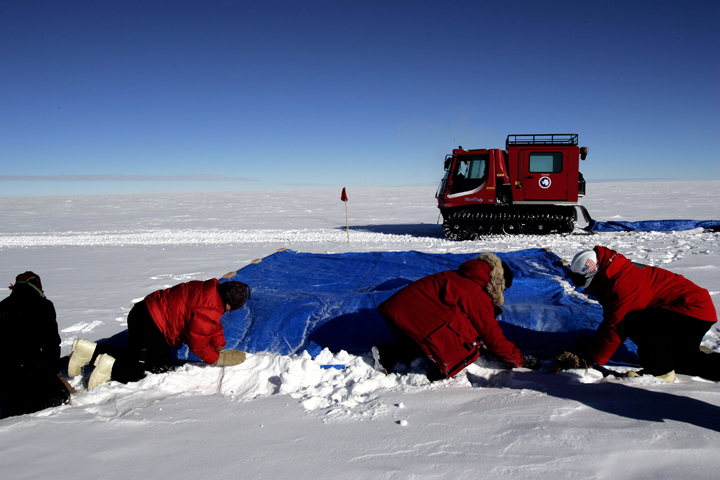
C-17 makes its first South Pole airdrop

Members of the National Science Foundation wintering in the Antarctic prepare the drop zone for a C-17 Globemaster III that will be airdropping supplies Dec. 20. Airmen from the 62nd and 446th Airlift Wings at McChord Air Force Base, Wash., delivered 70 tons of supplies to the team. The mission was a